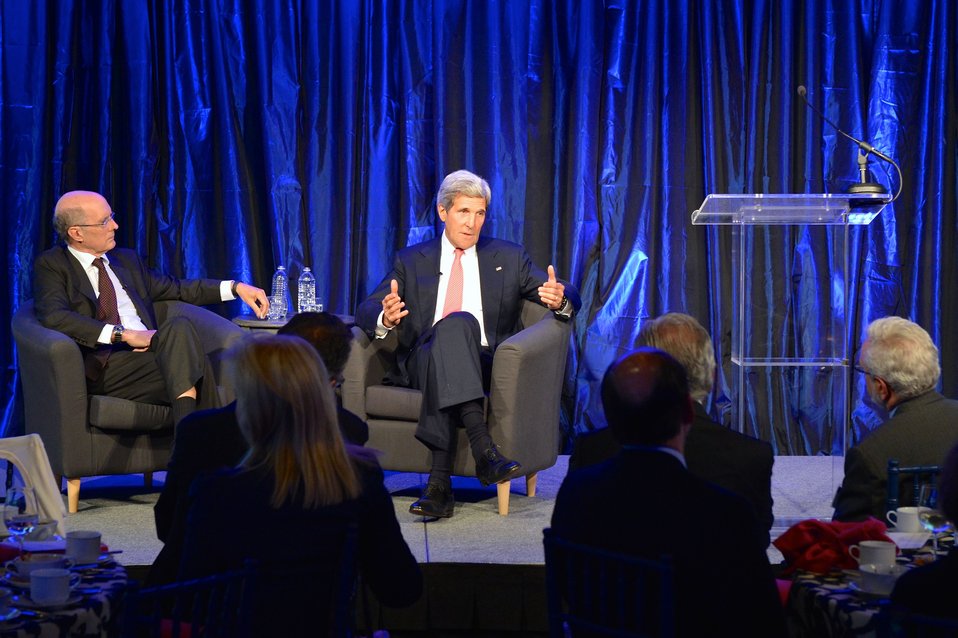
Secretary Kerry Meets With Brookings Board of Trustees and International Advisory Council

U.S. Secretary of State John Kerry meets with the Brookings Board of Trustees and International Advisory Council in Washington, D.C., on May 29, 2014.